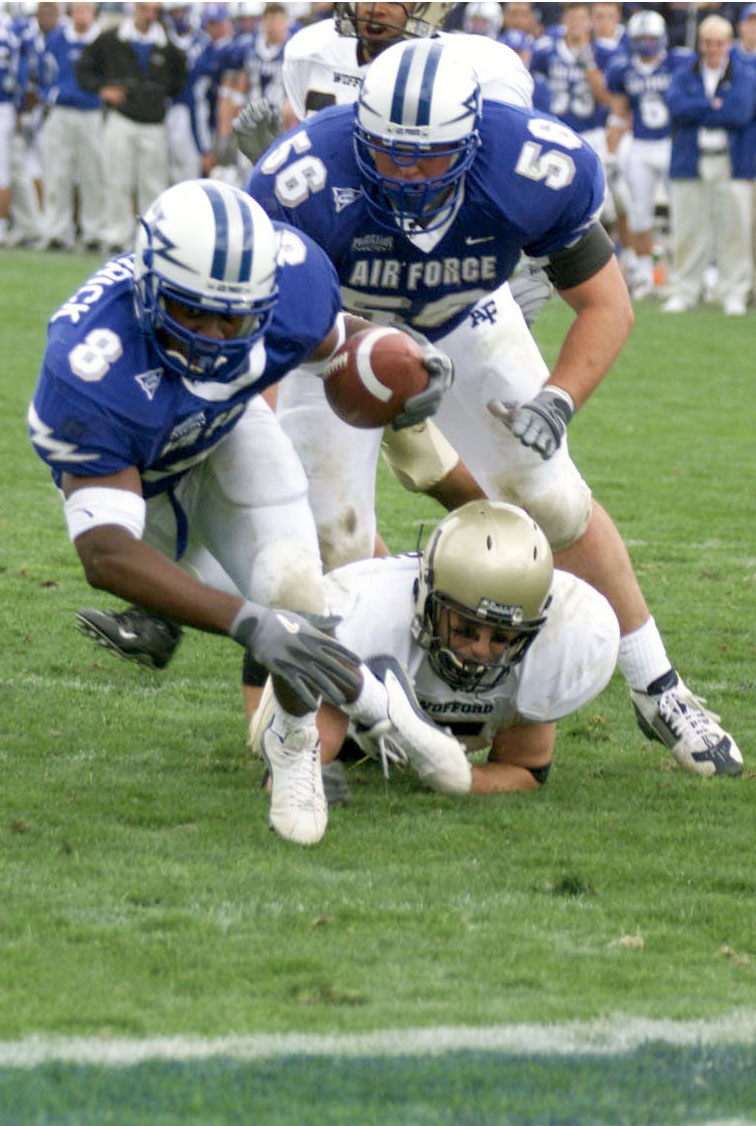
End zone dive

U.S. AIR FORCE ACADEMY, Colo. -- Air Force Academy Freshman fullback Jacobe Kendrick eludes a tackle and dives into the end zone for his first collegiate touchdown. Kendrick had 14 carries for 62 yards, including this 8-yard scoring run. The Falcons shut out Wofford College on Aug. 30, 49-0.